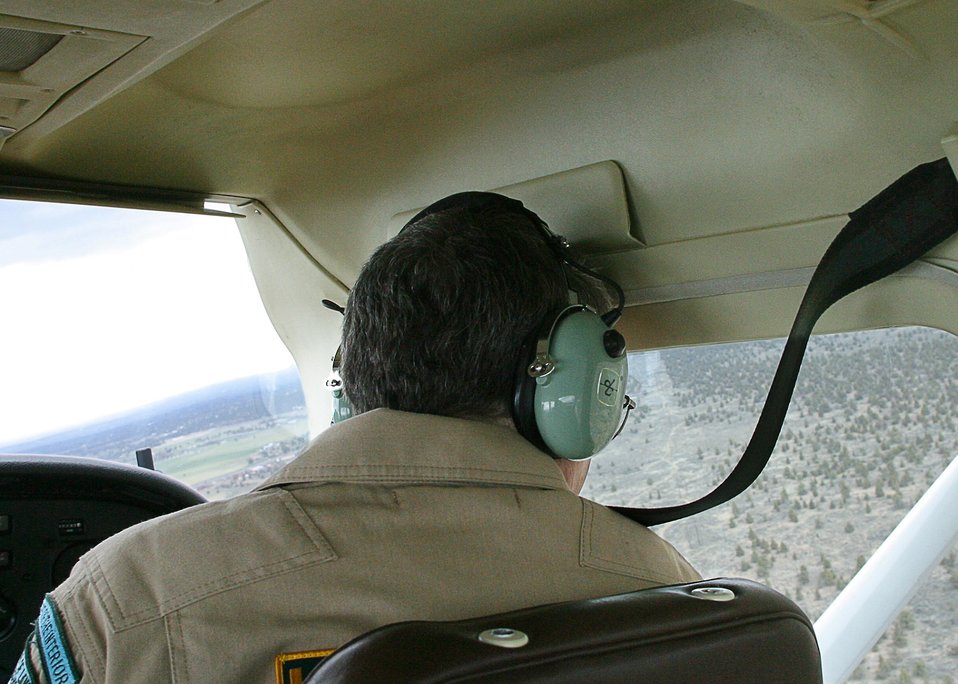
BLM Ranger Tom Teaford of the Prineville Distirict flies aerial patrols over the rural-urban interface of public lands in central Oregon. April 12, 2003.